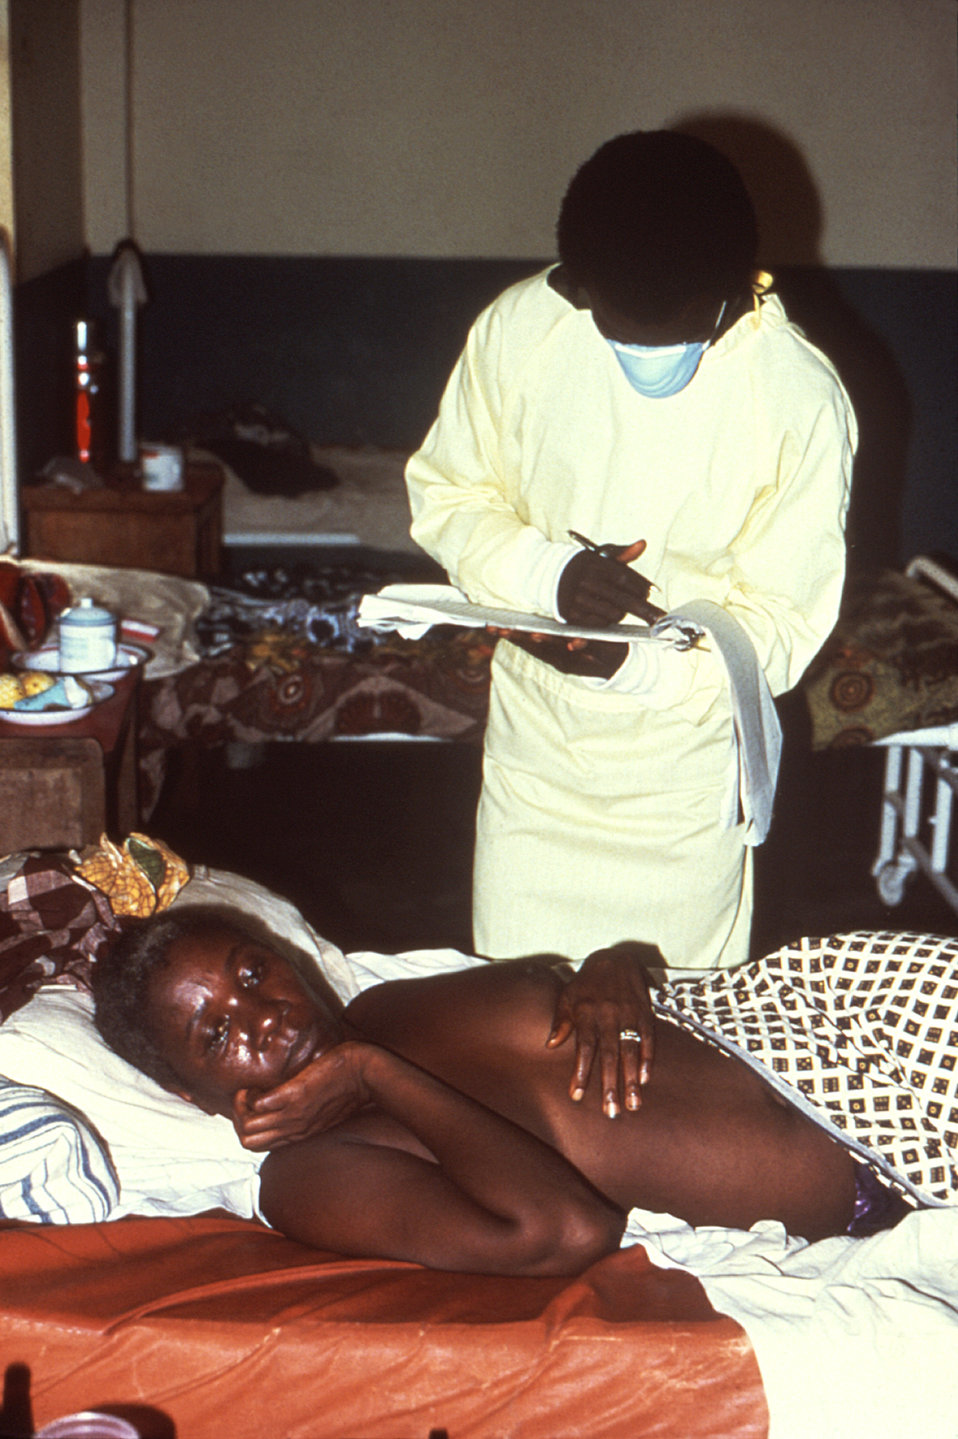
This 1977 image depicts a female Lassa fever patient as she receives treatment in the Segbwema, Sierra Leone clinic.